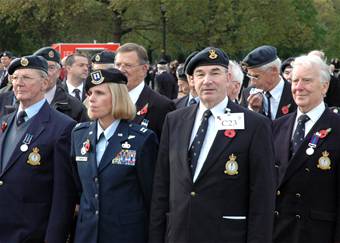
Remembrance Day Parade

Dr. Christopher Morris (second from right) stands with Capt. Jutta Cortes as they prepare to march in the annual Remembrance Day Parade in London. This is the first year the RAF Habbaniya Association has marched in the parade. It marks the 65th anniversary of a major battle in 1941 at RAF Habbaniya, Iraq.